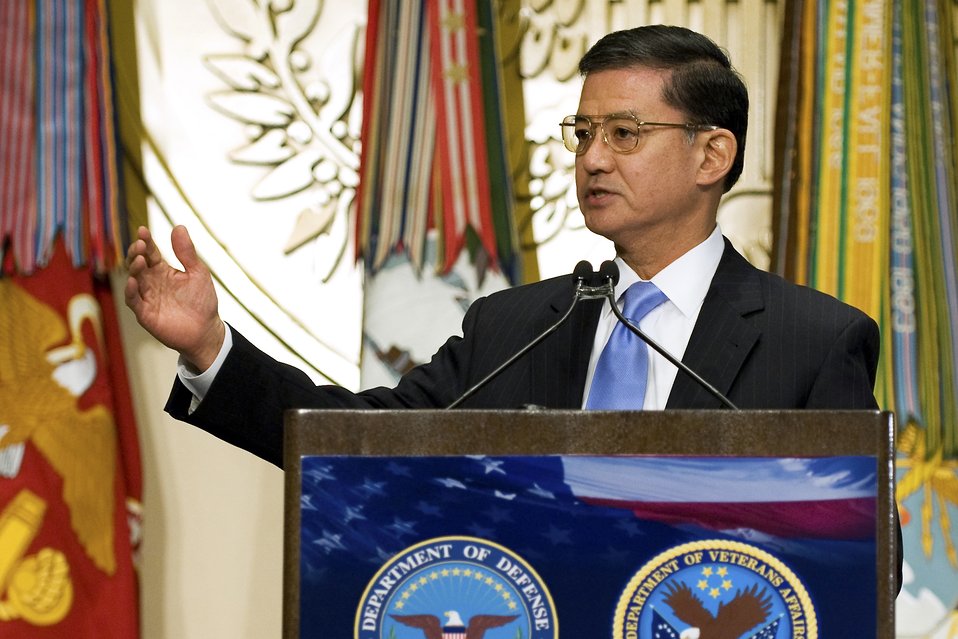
Shinseki Cites Collaboration in Mental Health Care

Secretary of Veterans Affairs Eric K. Shinseki addresses the audience during the Department of Defense/Veterans Affairs Mental Health Summit in Washington, D.C., October 26, 2009. The summit featured mental health experts from both departments, other cabinet agencies, and non-governmental organizations to discuss a public health model for enhanced mental health care for returning servicemembers, veterans and their families.